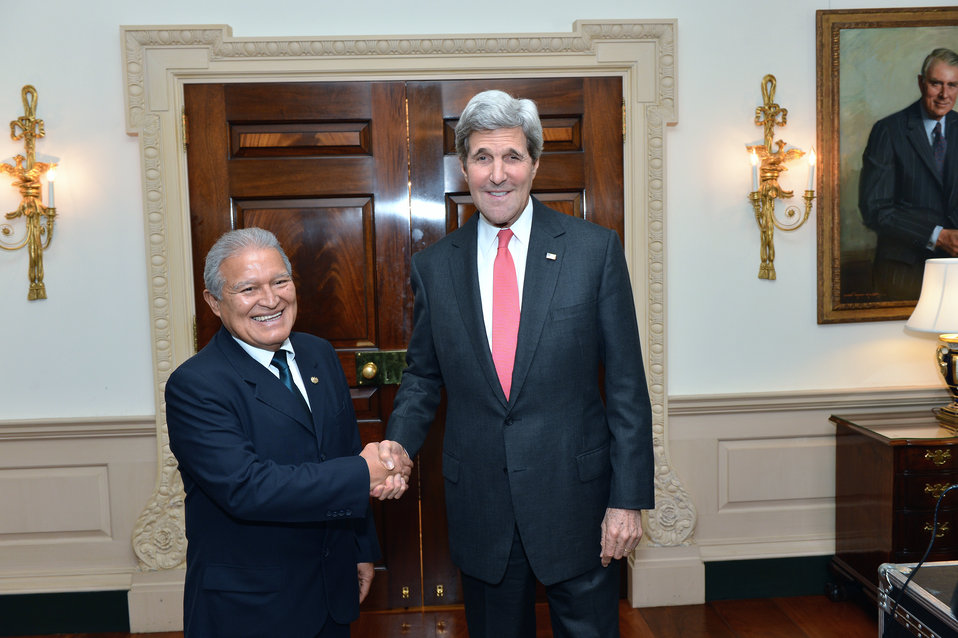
Secretary Kerry Meets With El Salvadorian President-Elect

U.S. Secretary of State John Kerry meets with El Salvadoran President-Elect Salvador Sanchez Ceren at the U.S. Department of State in Washington, DC on May 12, 2014.